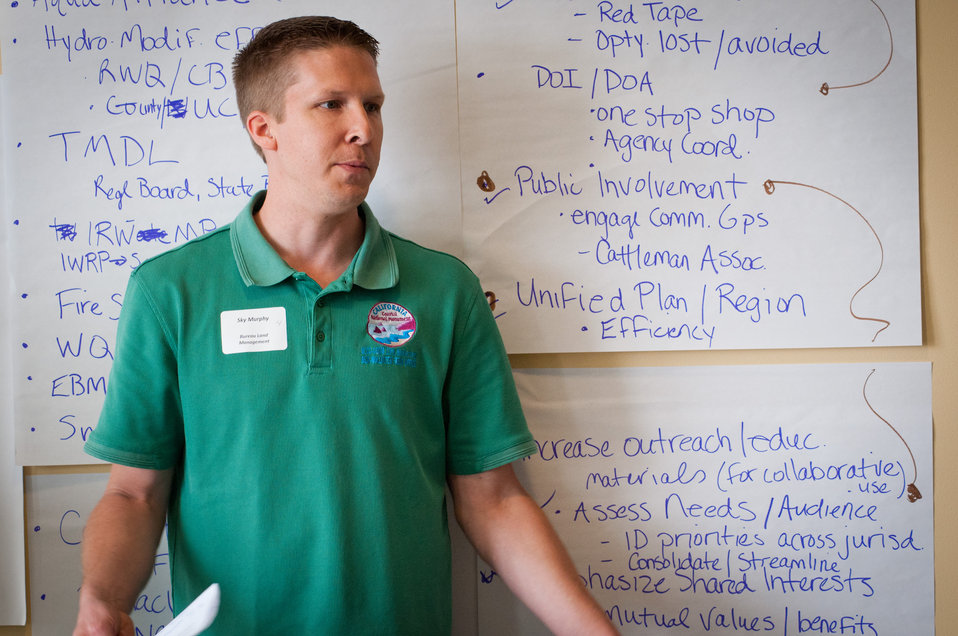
Bureau of Land Management's Sky Murphy facilitated a group who produced several sheets of information about successes, issues, needs, concerns, capabilities and priorities that the focus groups produced during the America’s Great Outdoors Initiative (AGO) Monterey Bay Pilot Area Focus Session in the City of Watsonville’s Civic Plaza in California, on Friday, June 17, 2011. Federal and state resource management agencies came together to identify partnership opportunities and determine actions for protection and enhancement of water quality and publicize voluntary stewardship in the watersheds that drain into the Monterey Bay National Marine Sanctuary. This area includes the counties of San Mateo, Santa Cruz, Santa Clara, San Benito, Monterey, and San Luis Obispo. Key questions identified existing multi-county or multi land use partnerships; what is not being done; possible partnerships - collective resources to maximize the benefits to natural resources and communities; and additional resources that organizations can bring to maximize AGO. President Barack Obama signed the initiative on April 16, 2010 to develop a 21st Century conservation and recreation agenda.